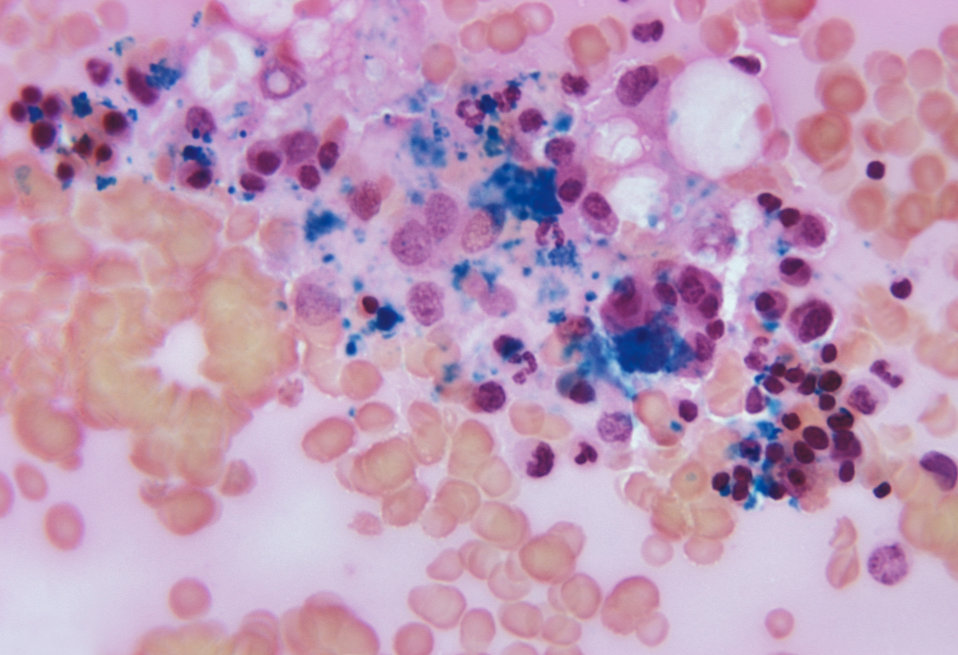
A photomicrograph of bone marrow tissue showing a normal amount of iron stores using Prussian blue staining technique.